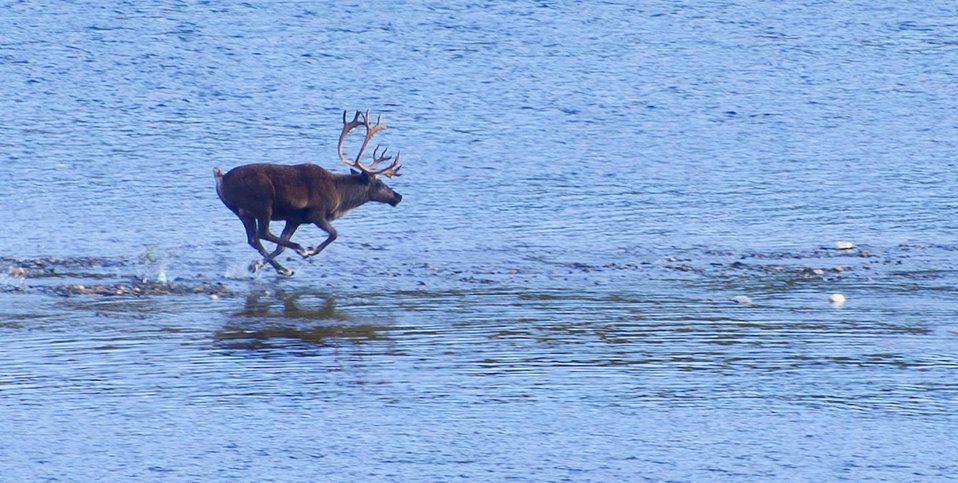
Lawrence Berkeley National Laboratory scientists are among a team developing new ways to study the changing arctic ecosystem.

The Next-Generation Ecosystem Experiments (NGEE) will study the response to physical, ecological, and biogeochemical processes to atmosphere and climate change from the molecular to the landscape scale.